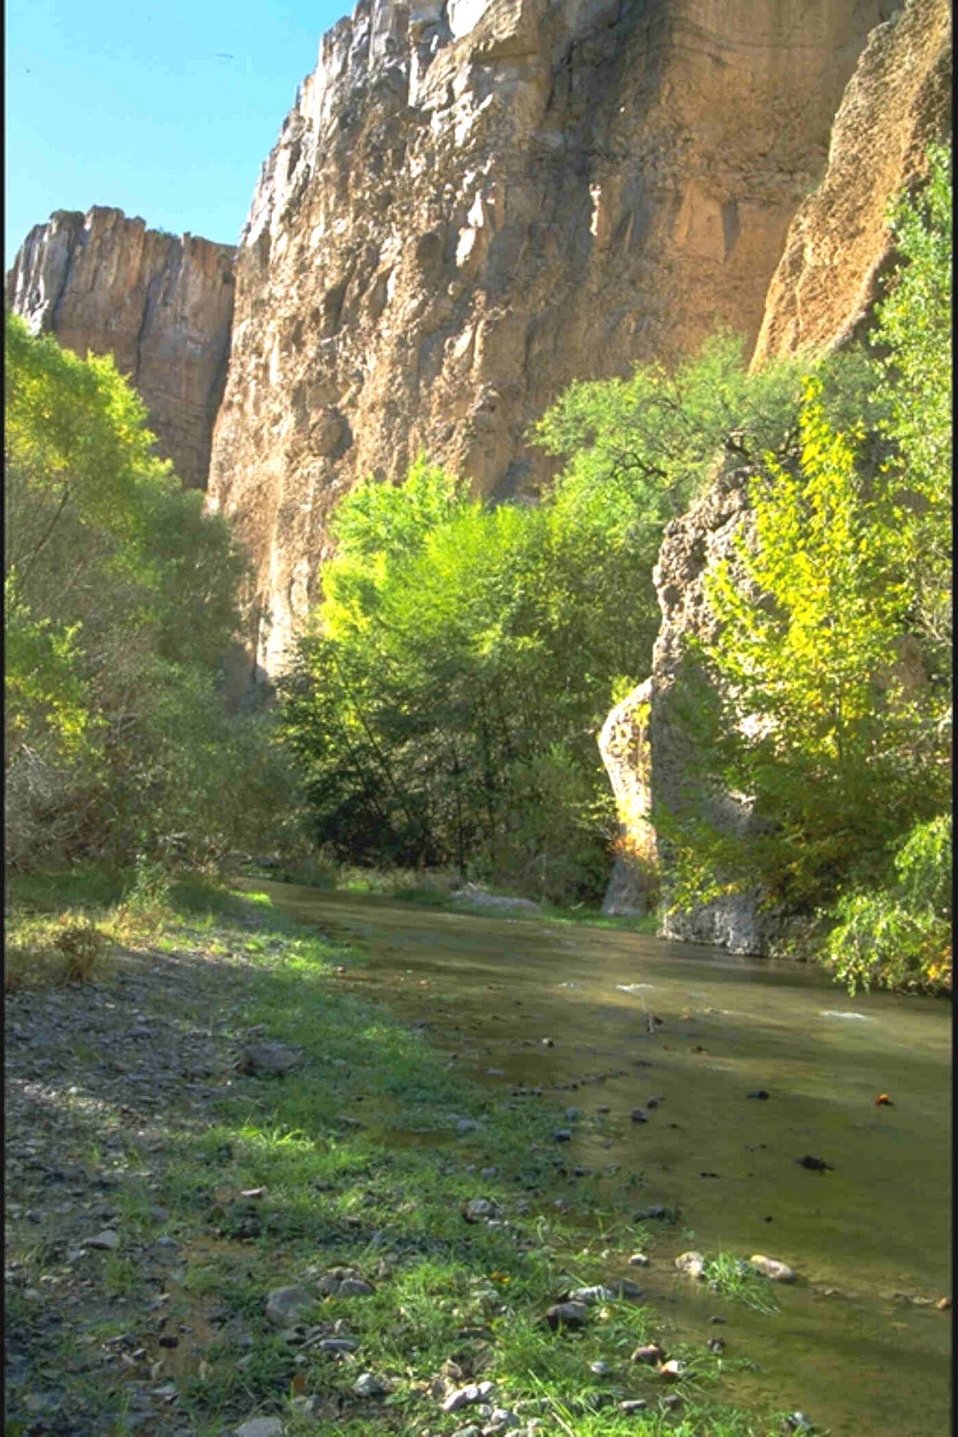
Emerald foliage near Booger Canyon.